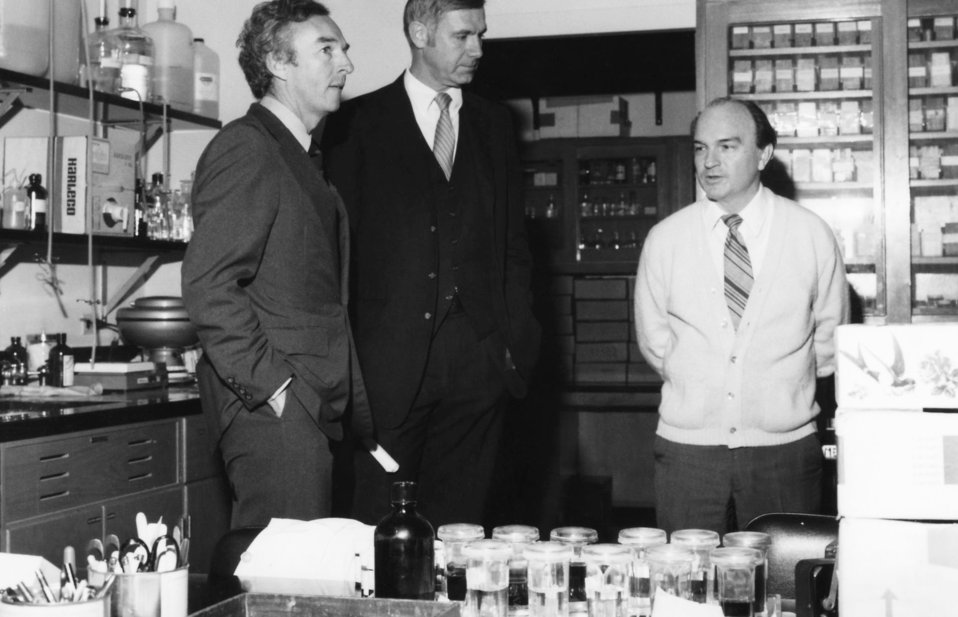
U.S. Senator Wyche Fowler (D-Ga.) (left), is shown here during a tour of the Centers for Disease Control laboratories led by CDC Director William Foege, M.D., M.P.H. (1977 - 1983) (center), and Deputy Director Walter Dowdle, M.D. (right).